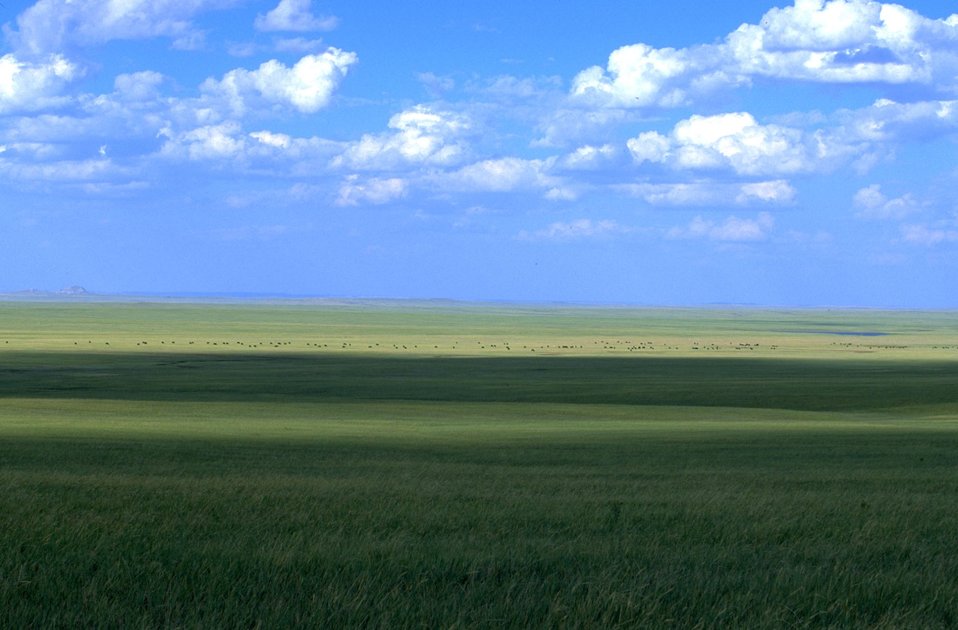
Grassland Vista 35 mles north of Belle Fourche